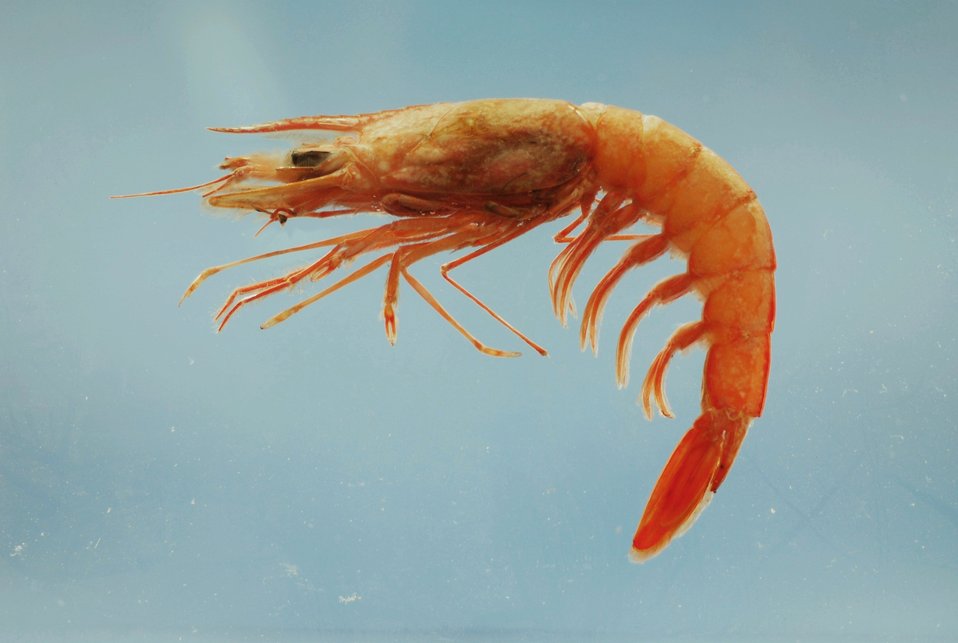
Royal red shrimp ( Pleoticus robustus )